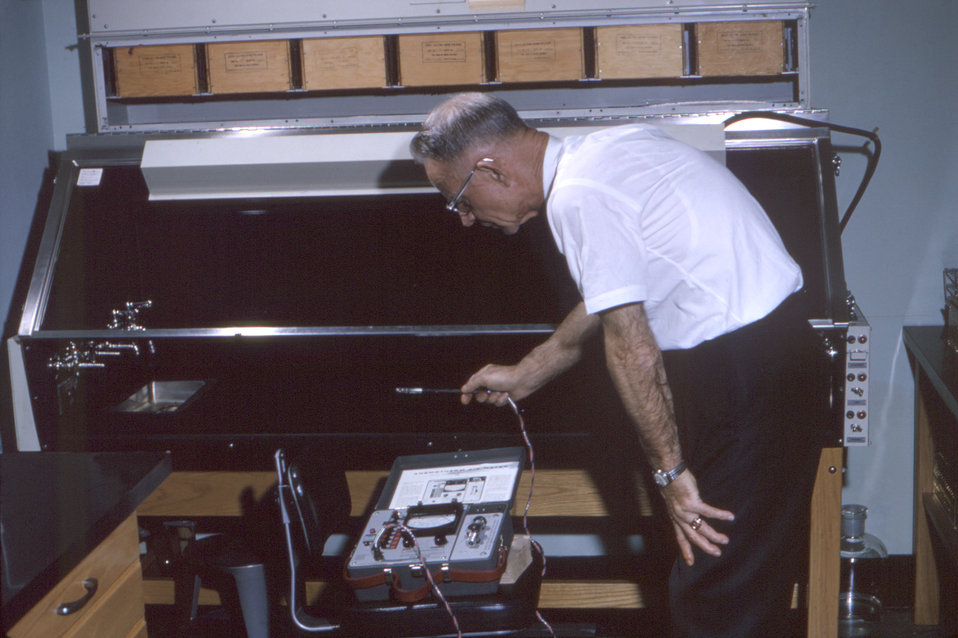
This historic 1964 image depicted a laboratory inspector, while he was inspecting one of the Centers for Disease Control's biosafety cabinets, using an Anemotherm Air Meter. This meter measured the characteristics of gasses including their temperature and velocity.